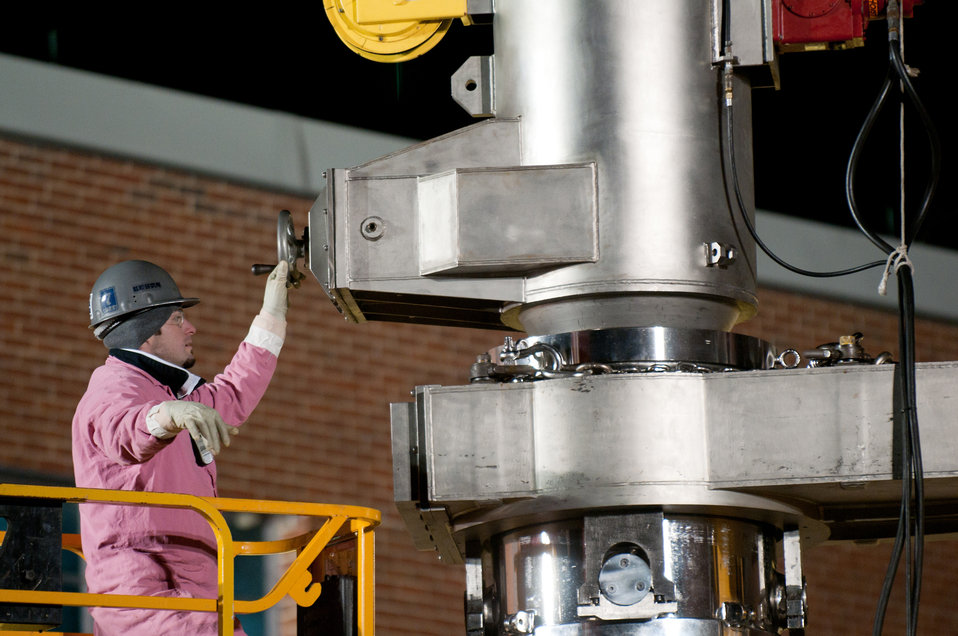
Argonne Forges Ahead in Waste Removal, Facility Demolitions with Recovery Act Help

A canister of irradiated sodium-bonded nuclear fuel specimens from Argonne’s Alpha Gamma Hot Cell Facility is lowered onto a shipping cask for shipment to Idaho National Laboratory.